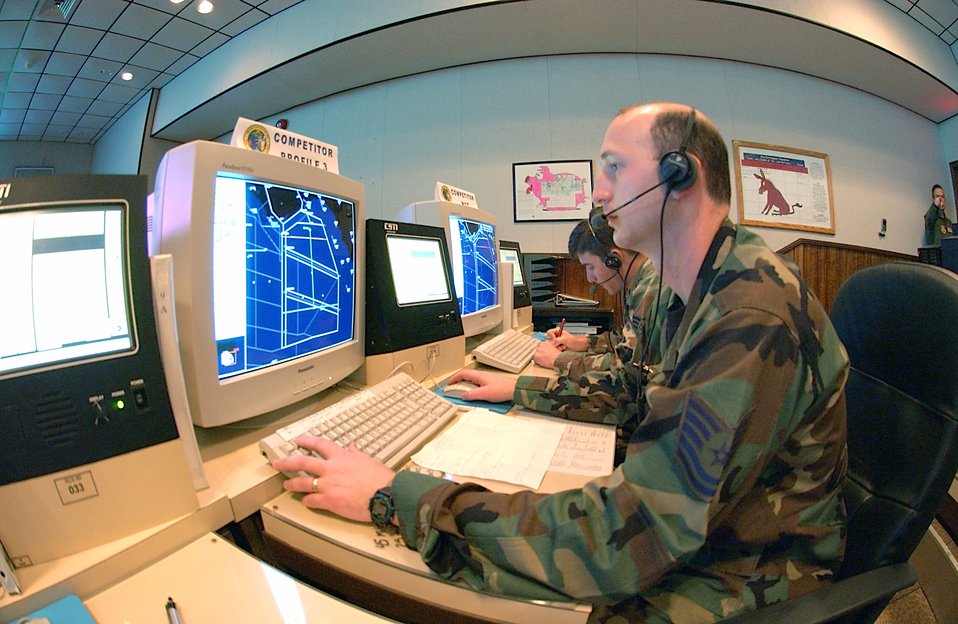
Weapons directors provide situational awareness

TYNDALL AIR FORCE BASE, Fla. -- Tech. Sgt. Adam R. Melerski directs F-15 Eagle pilots to aerial targets during William Tell 2004 here Nov. 16. He is a weapons director for the Oregon Air National Guard at Portland.